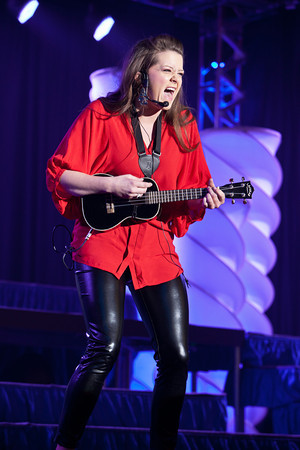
Unforgettable

First Lt. Ashley Elmore sings